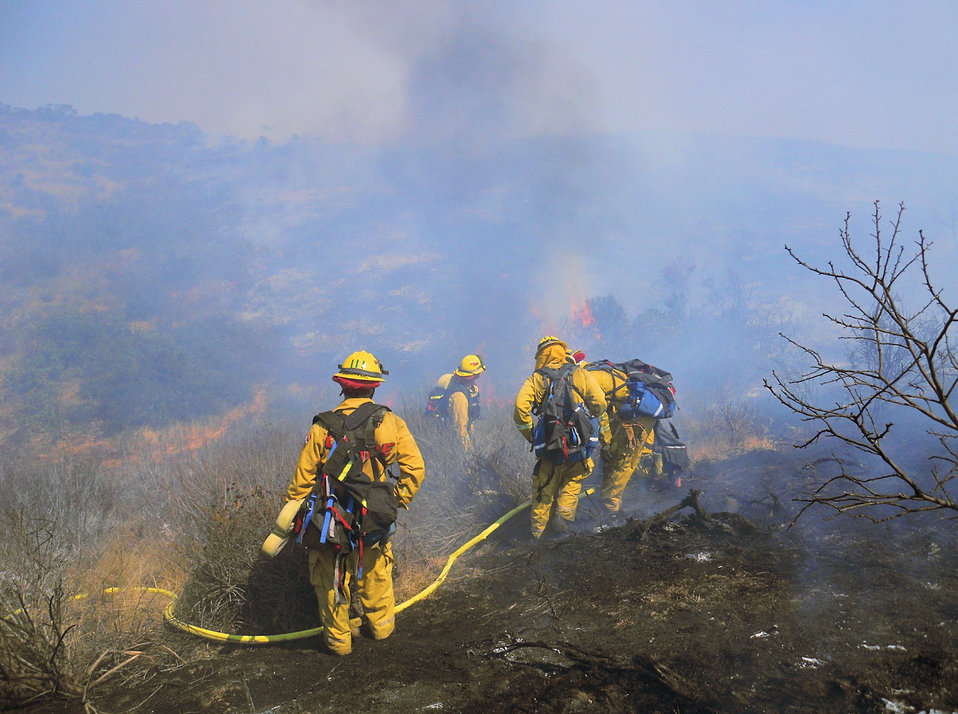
Sept 2010 Jamacha Fire- Crews Protect Community

CalFire and US Fish & Wildlife Service Engine 58 crew implement a progressive hoselay to protect the community of Spring Valley from the Jamacha Fire burning on the San Diego National Wildlife Refuge. Blaine Inglis/USFWS photo